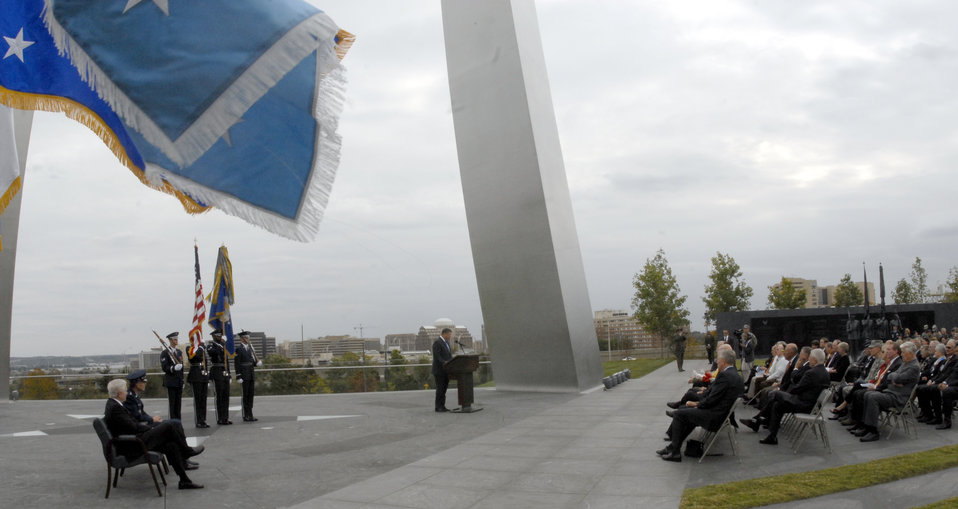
Donley officially sworn in as Secretary of the Air Force

Secretary of the Air Force Michael Donley provides a few remarks following his swearing-in ceremony Oct. 17 while Secretary of Defense Robert Gates and Air Force Chief of Staff Gen. Norton Schwartz look on. The ceremony took place at the Air Force Memorial in Arlington, Va.